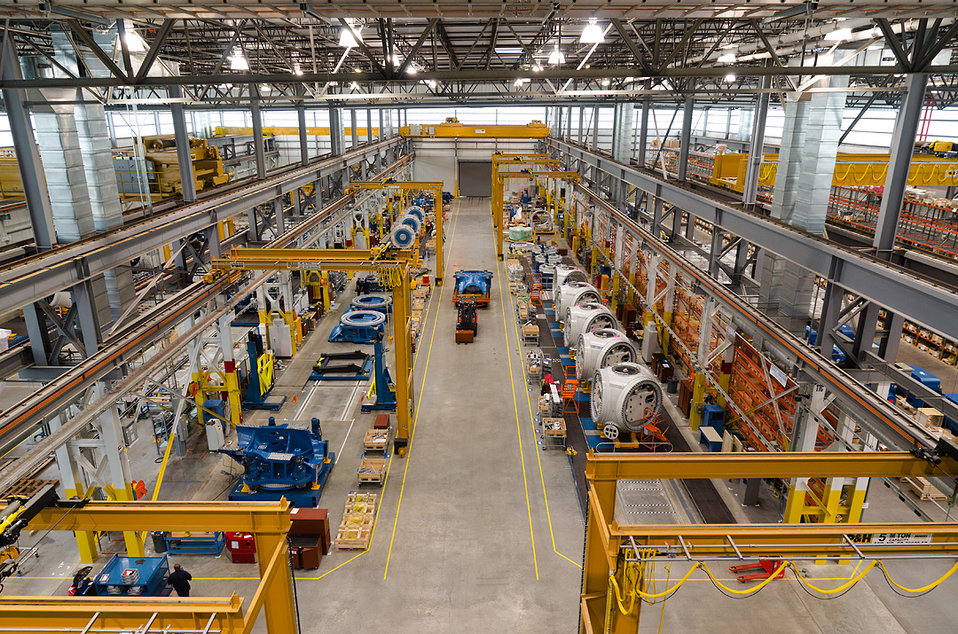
Nordex USA manufacturing facility - Jonesboro, Arkansas.